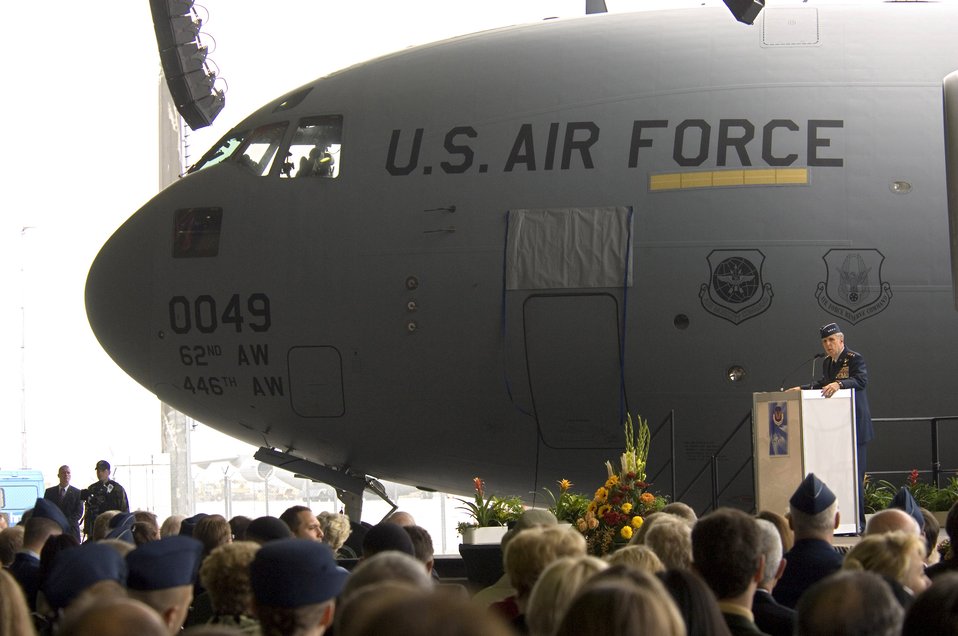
Airlift honored

RHEIN-MAIN AIR BASE, Germany -- Gen. Robert H.